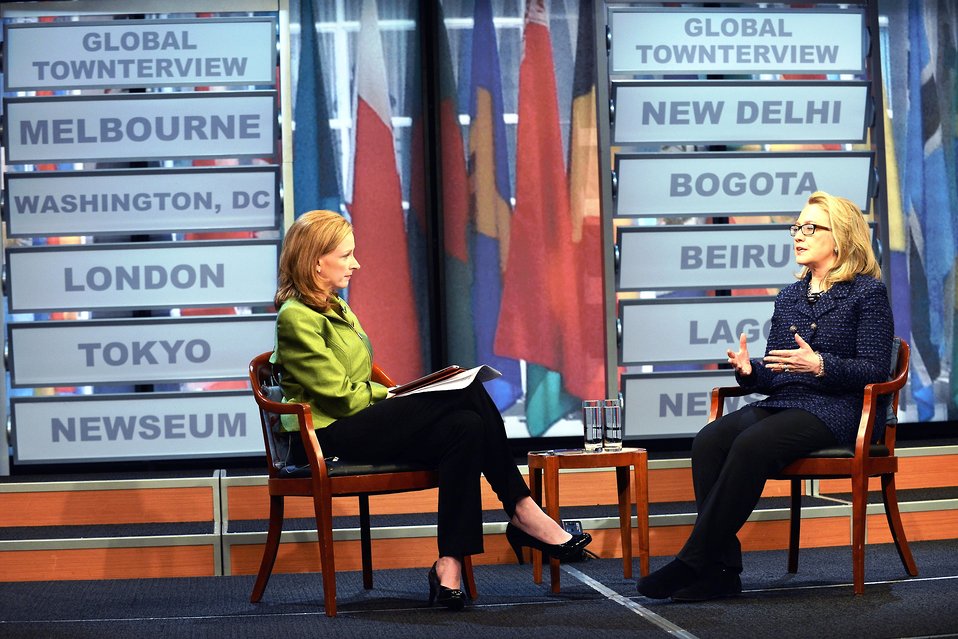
Secretary Clinton Participates in a Global Town Hall

U.S. Secretary of State Hillary Rodham Clinton participates in a Global Town Hall, moderated by Leigh Sales of the Australian Broadcasting Corporation, at the Newseum in Washington, D.C., on January 29, 2013.